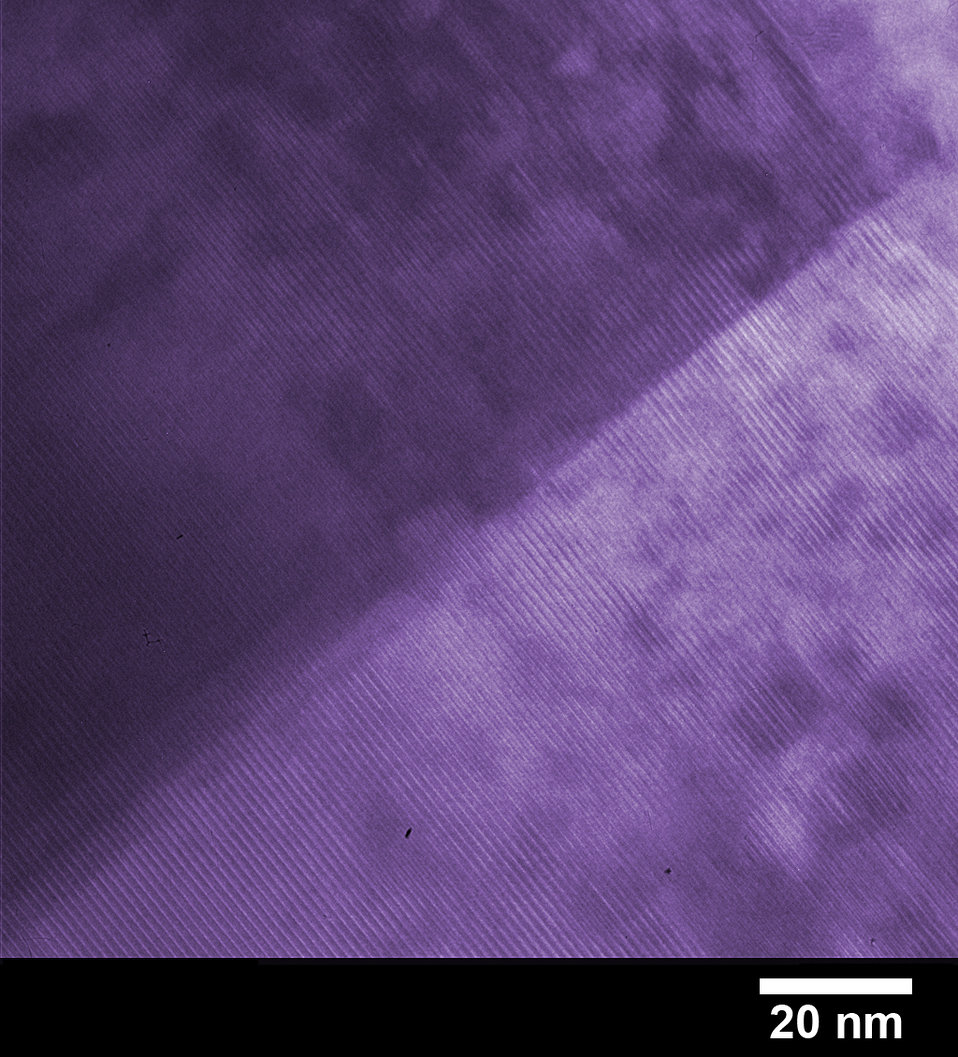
High-Temperature Superconductivity